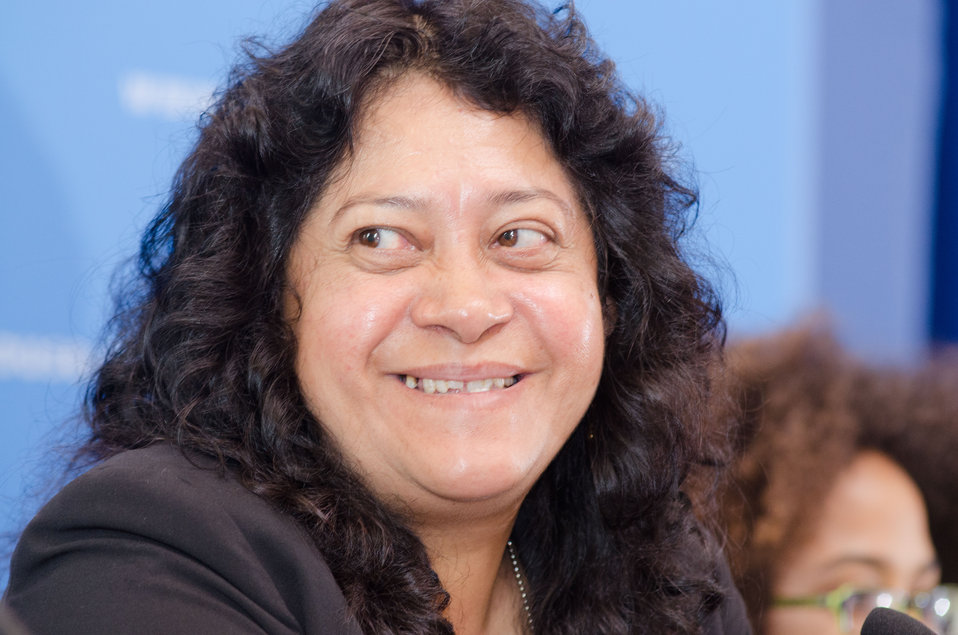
Parents United for Healthy Schools Leader Jovita Flores is one of eleven honorees recognized for their efforts to reduce hunger and increase food security in the U.S. and internationally at the White House Champions of Change Strengthening Food Security at Home and Abroad Event held at the White House on Thursday, September 6, 2012, in Washington, D.C.